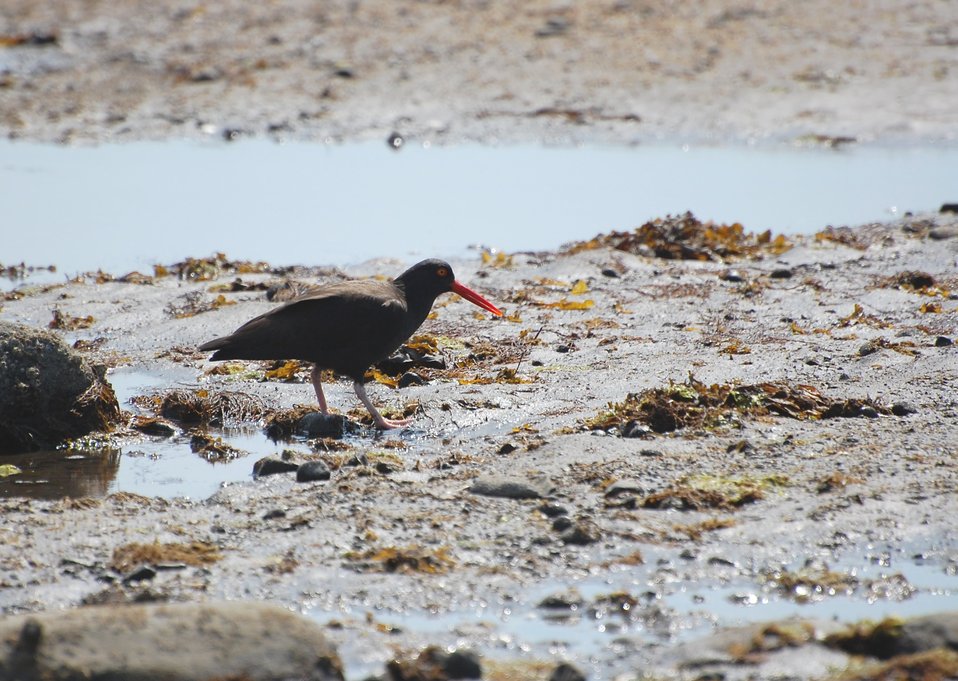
Black Oystercatcher

Kinzarof Lagoon, Izembek National Wildlife Refuge
Photo by Kristine Sowl,
USFWS, Public Domain